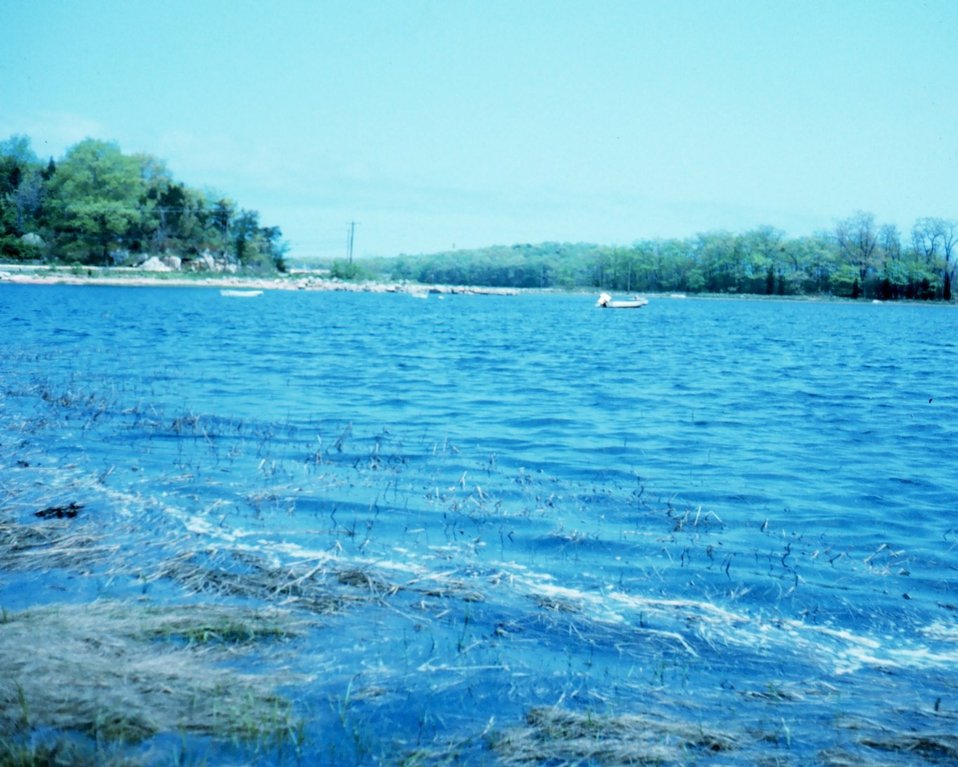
Coastal bay area